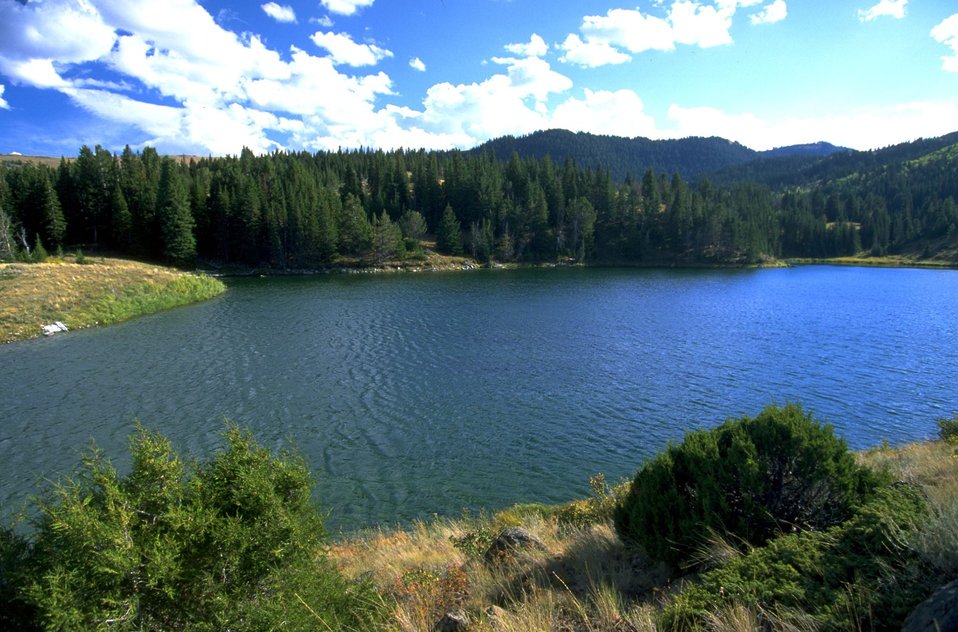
Scenic view of a lake